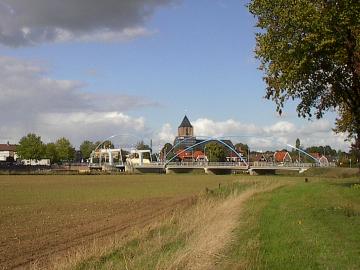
Dalfsen, eigen foto